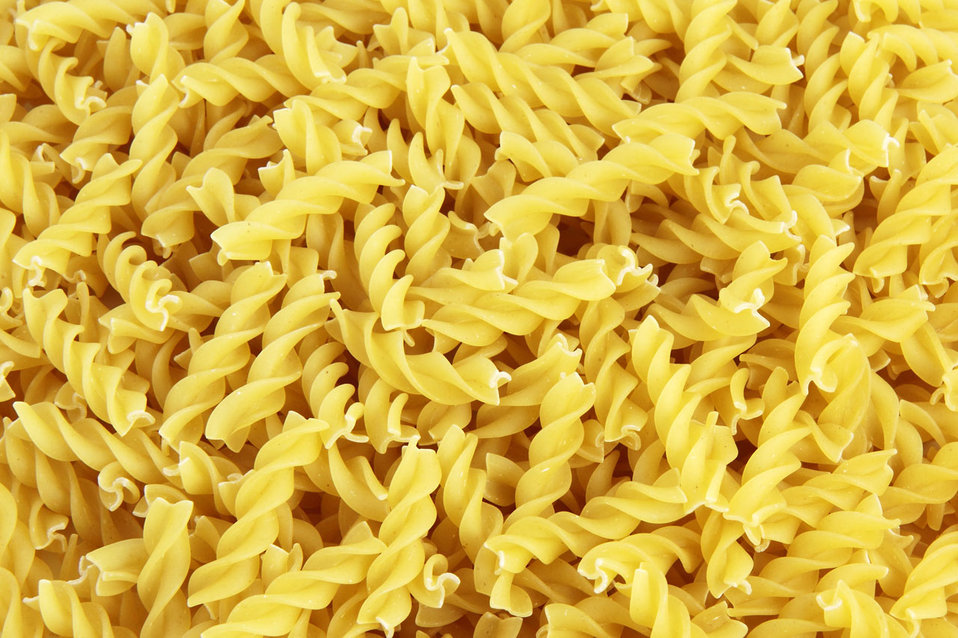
Yellow fusilli

Uncooked dry yellow fusilli pasta as a background.